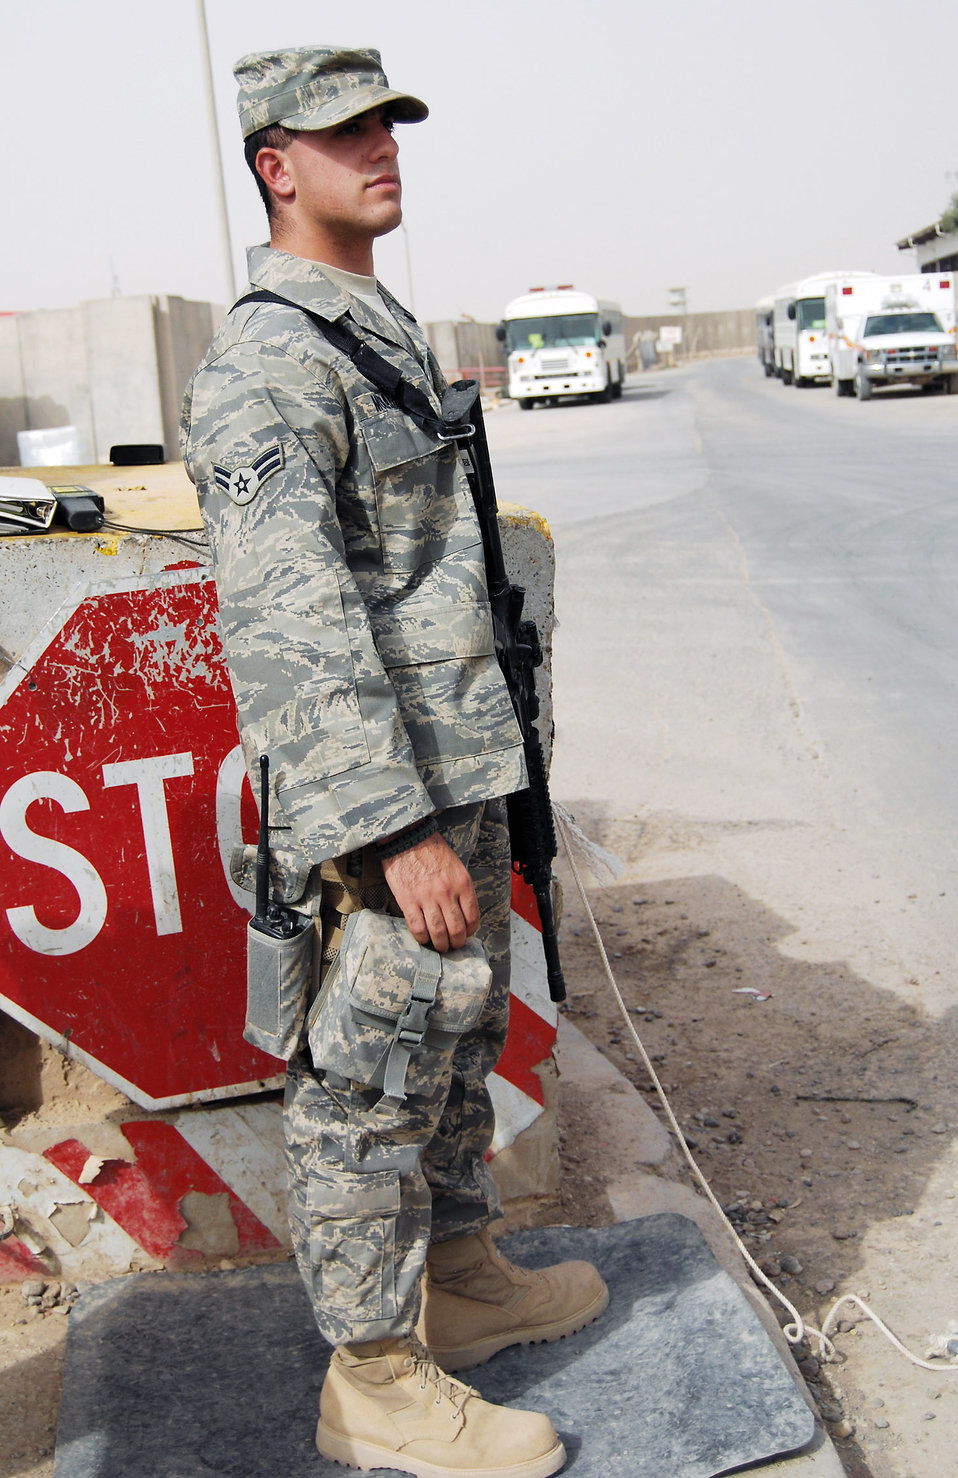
Baghdad native returns to Iraq as American Airman

Airman 1st Class Murad Mohiadeen defends an entry control point near the Air Force Theater Hospital Aug. 2 at Joint Base Balad, Iraq. Airman Mohiadeen, a native of Baghdad, was raised in the United States when his family emigrated from Iraq in 1990. Airman Mohiadeen is a security forces apprentice with the 332nd Expeditionary Security Forces Squadron here and is deployed from Royal Air Force Lakenheath, England.